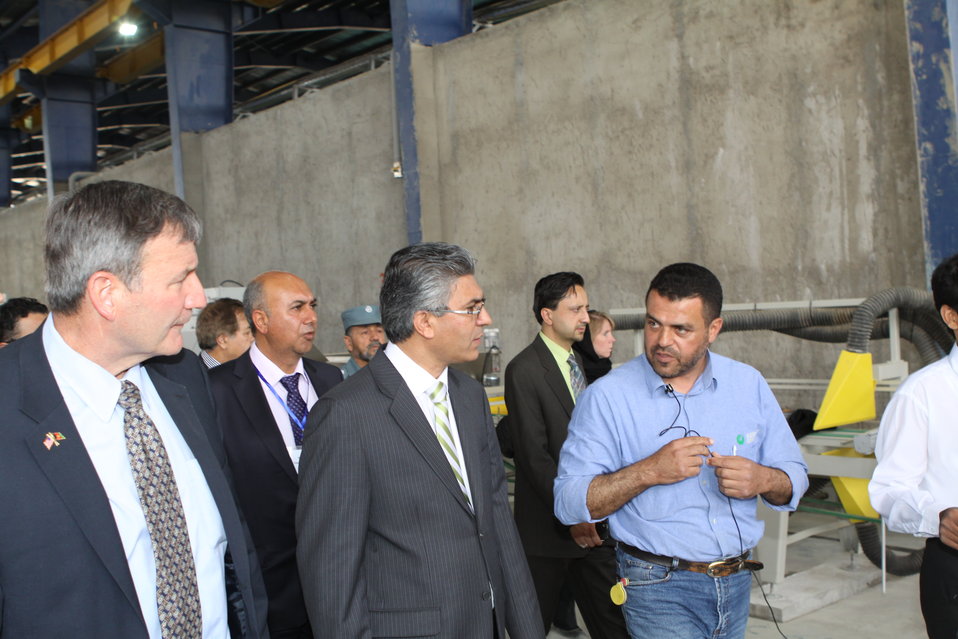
100525 Hirat Marble Conference 410